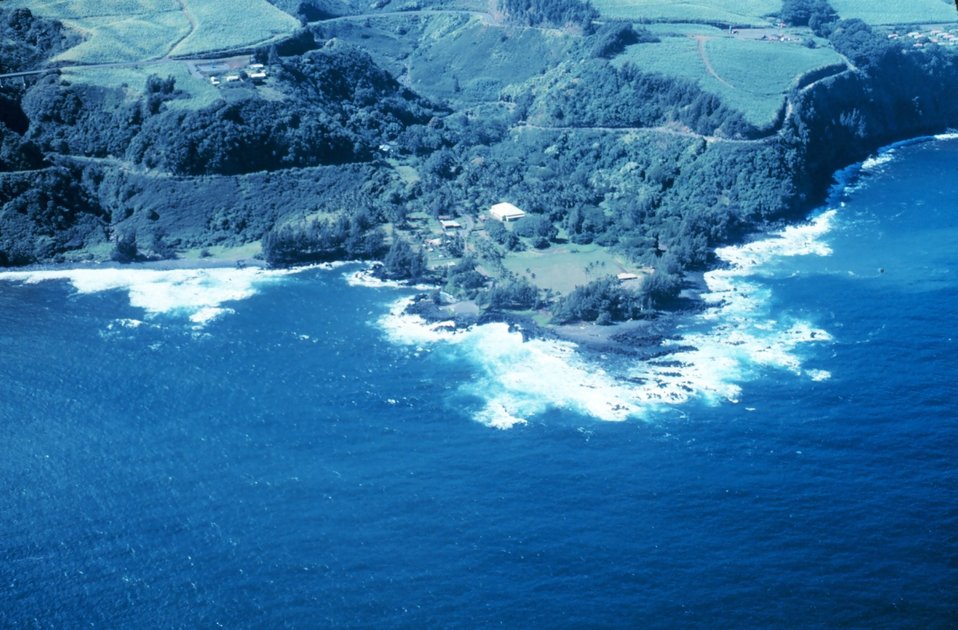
The southern end of Hawaii from the air